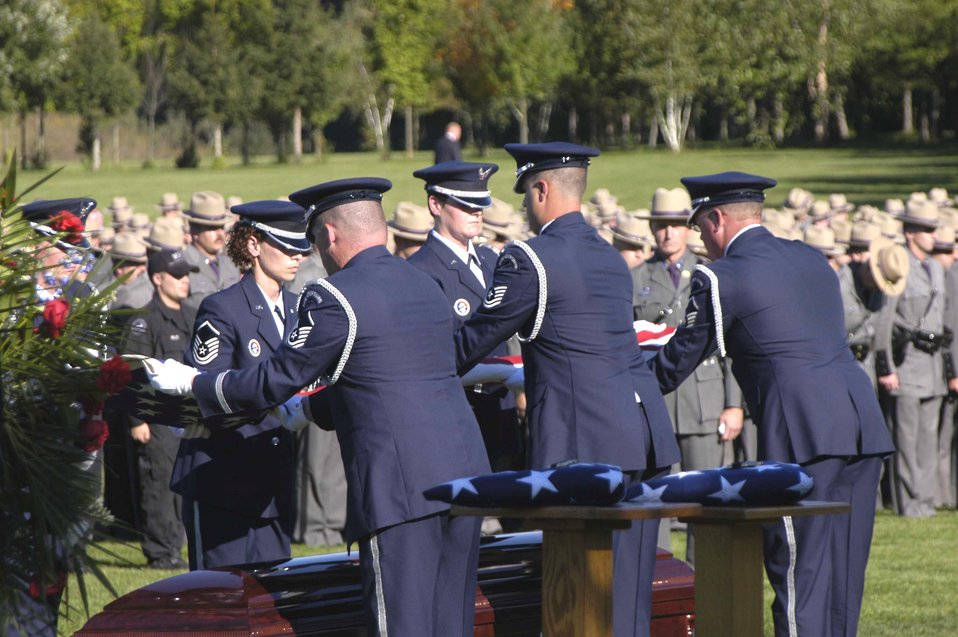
Airmen pay tribute to fallen guardsman

Airmen from the New York Air National Guard's 109th Airlift Wing Honor Guard lift the flag from Master Sgt. Joseph Longobardo's casket during his funeral Sept. 11. Sergeant Longobardo, a guardsman with the 109th Security Forces Squadron, was a New York State Police officer who was killed in the line of duty Sept. 3 while participating in the manhunt for fugitive Ralph